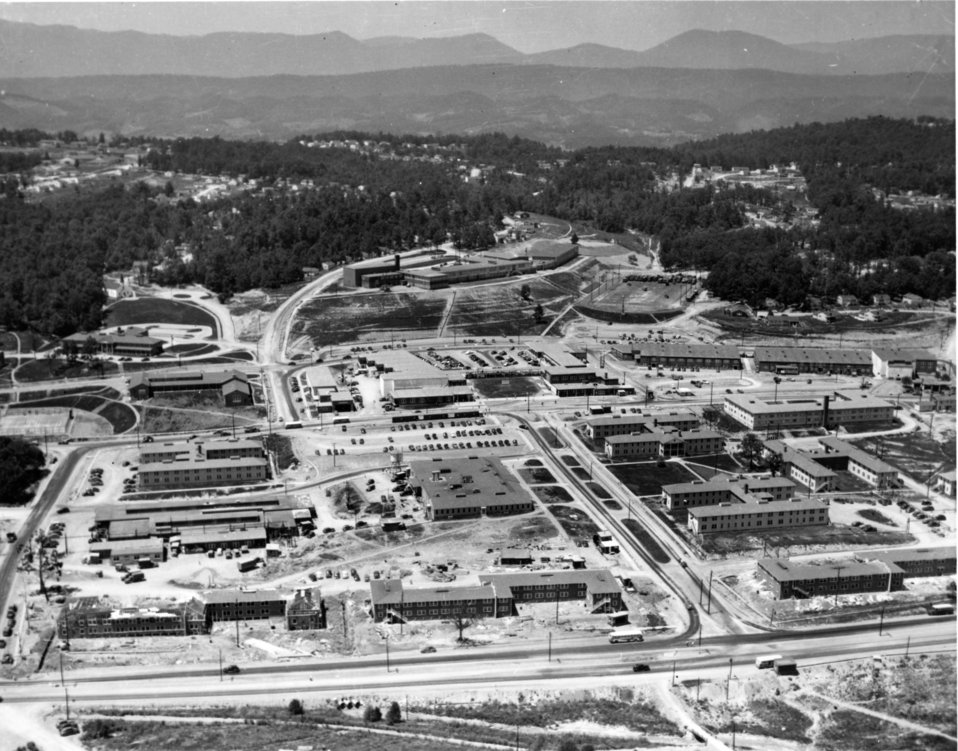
Aerial of Oak Ridge